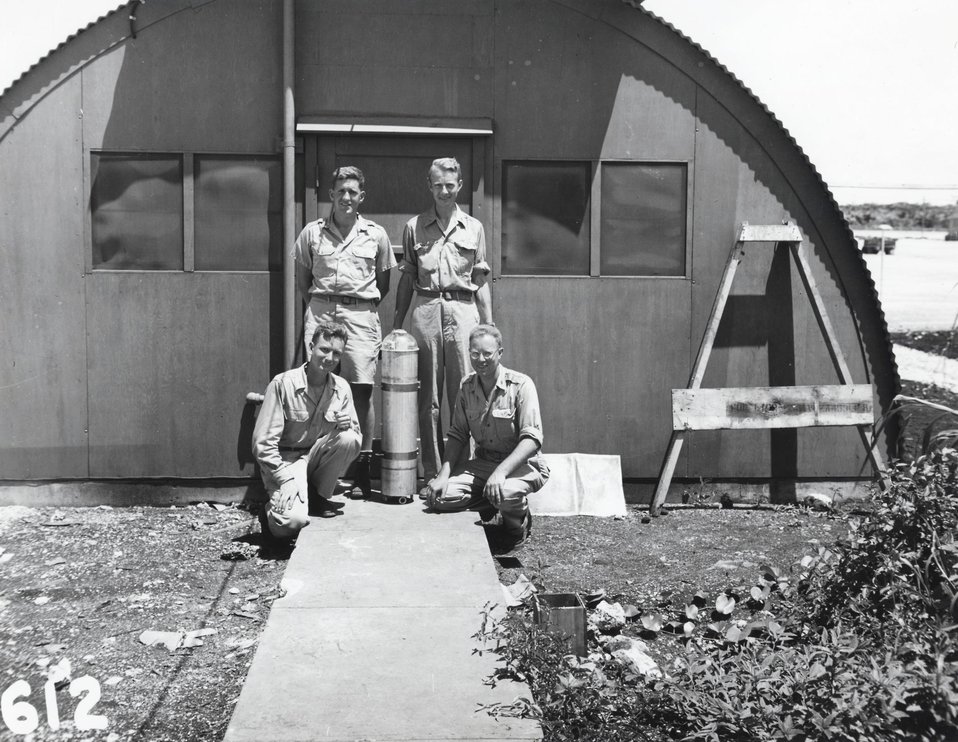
AGNEW, ALVAREZ, JOHNSTON, AND WALDMAN ON TINIAN